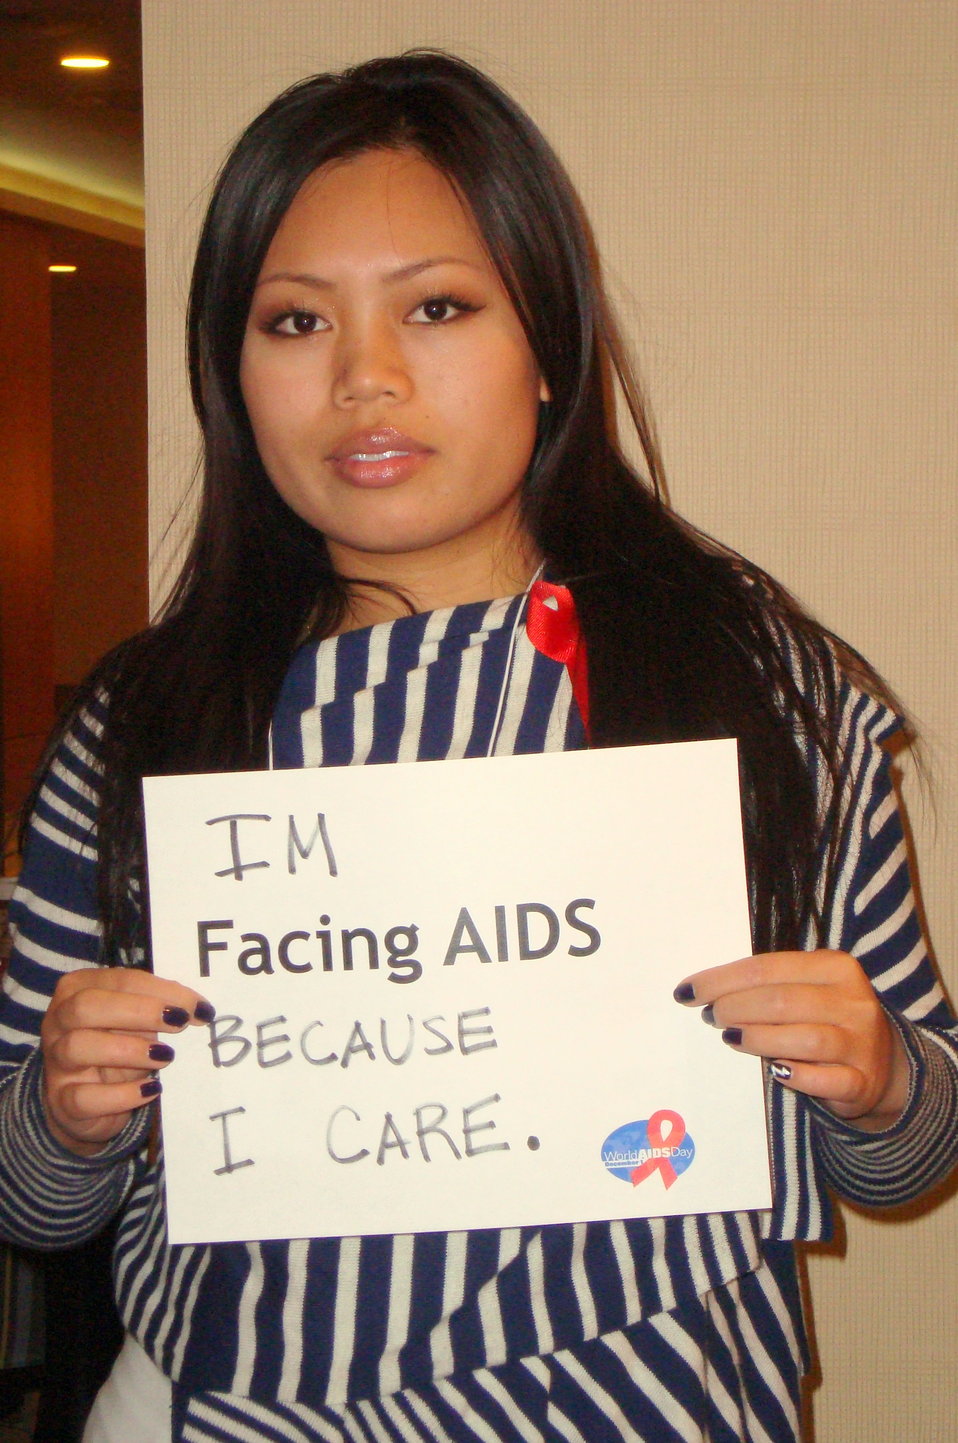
FacingAIDSCampaign 019